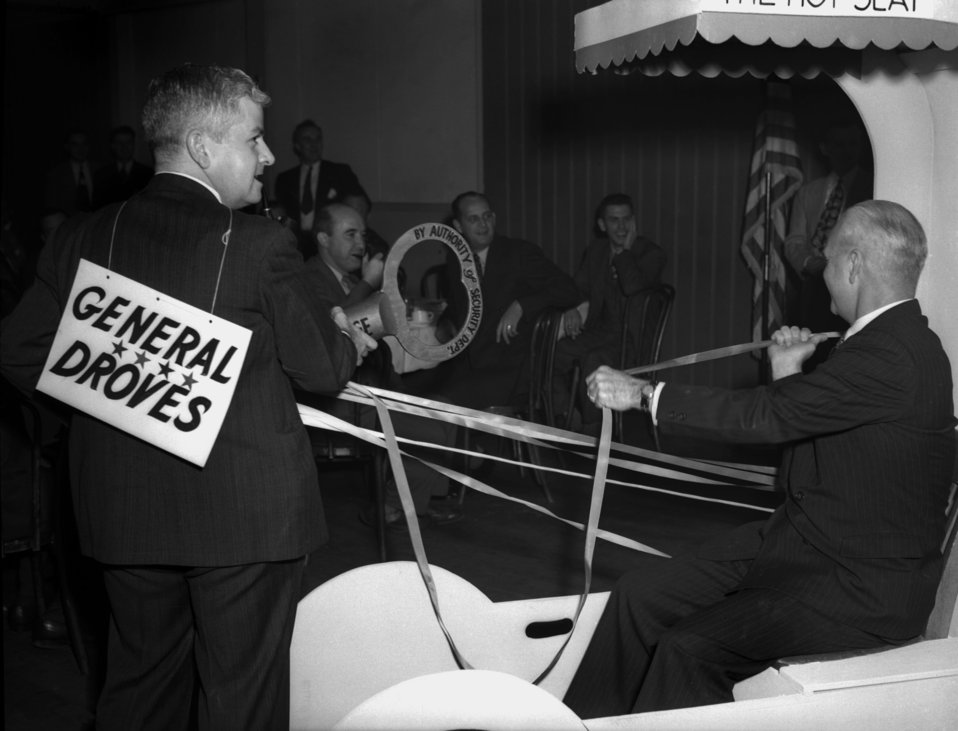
Lyons Club Oak Ridge

3336-4c DOE photo Ed Westcott 3-10-1947 Oak Ridge Tennessee